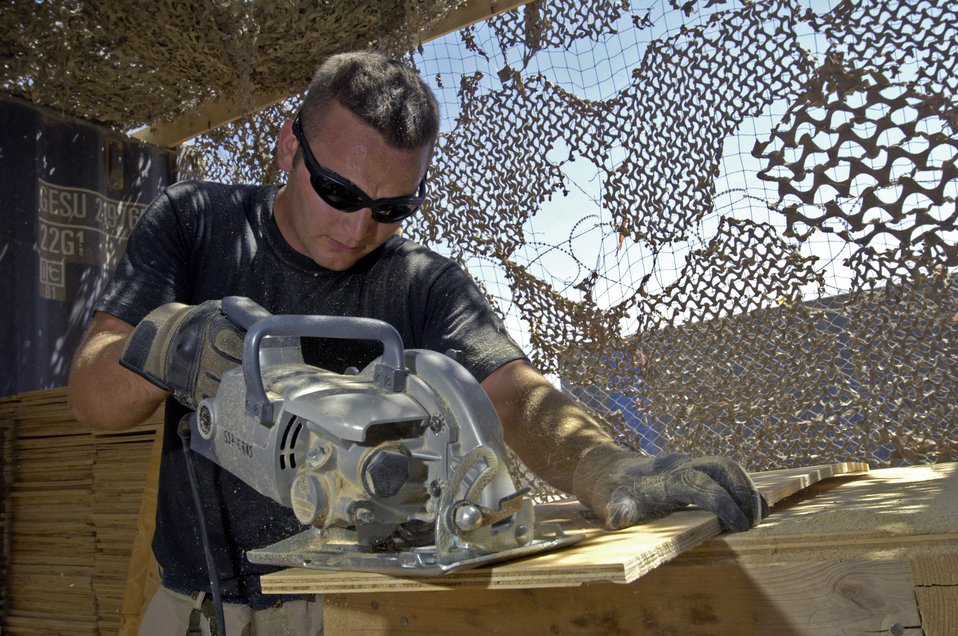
RED HORSE Airmen support Army in southern Baghdad

Airman 1st Class Tyler Peterson cuts truss pieces for the roof of a tactical operations center June 22 at Forward Operating Base Kalsu, Iraq. Airman Peterson is a utilities journeyman with the 557th Expeditionary RED HORSE Squadron deployed from the 319th Civil Engineer Squadron at Grand Forks, N.D., and is originally from Great Falls, Mont. Airman Peterson and his fellow Rapid Engineer Deployable Heavy Operational Repair Squadron Engineers, or RED HORSE, Airmen are forward deployed from Balad Air Base, Iraq, and are tasked to build four tactical operations centers for the Army's 2nd Brigade combat team, 3rd Infantry Division headquartered here. The 2/3 ID is currently running operations out of tents. The RED HORSE unit, made up of Air Guard, Reserve and active-duty Airmen, was requested by the Army to come into this